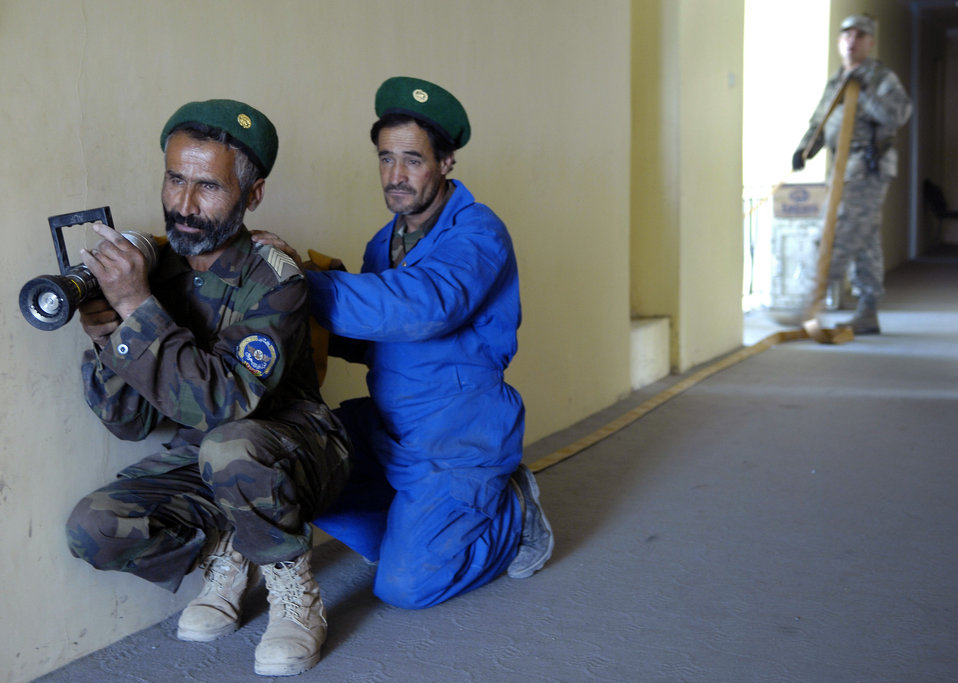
Firefighters bring

Master Sgt. Tim Rickard looks on as (front) Sgt. Basir and Sgt. Asadullah, Afghan National Army Air Corps firefighters, post in the hallway of a building at Kabul International Airport, Afghanistan, during a training exercise here. The firefighters are training with Air Force mentors, to build their fire protection capability. Sgt. Rickard is a firefighter mentor, deployed here from the 36th Civil Engineer Squadron, Andersen Air Force Base, Guam.